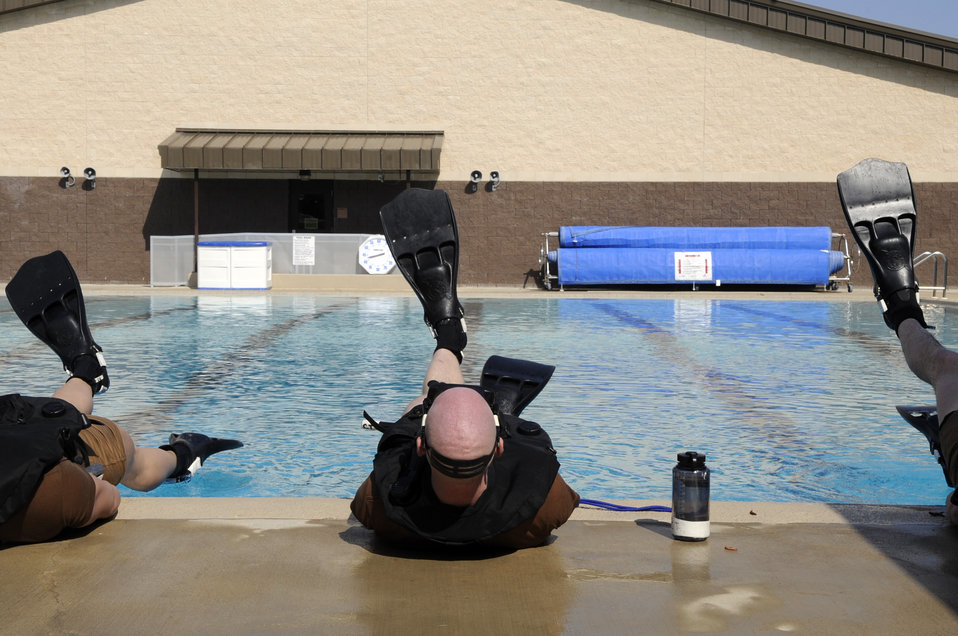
Special Tactics Training

Special Operations Airmen in training do flutter kicks Feb. 10 during their pre-scuba formal training at Hurlburt Field, Fl. Airmen are assigned to the Special Tactics Training Squadron.